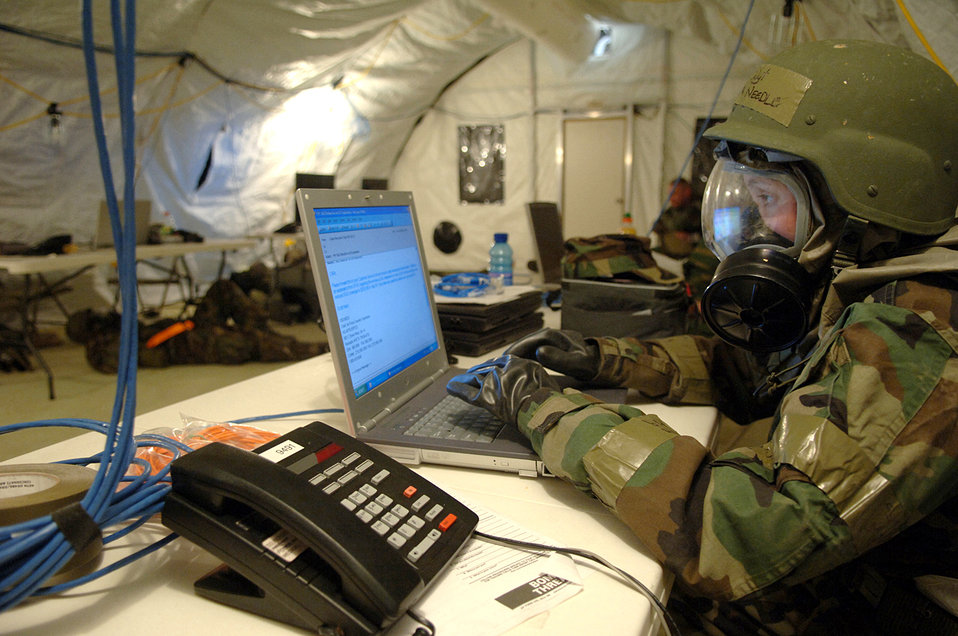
Continuing work

DAVIS-MONTHAN AIR FORCE BASE, Ariz. -- Staff Sgt. Tamara Needle checks her e-mail in chemical warfare gear during exercise Bushwacker 06-01. Sergeant Needle is with the 355th Communications Squadron here.